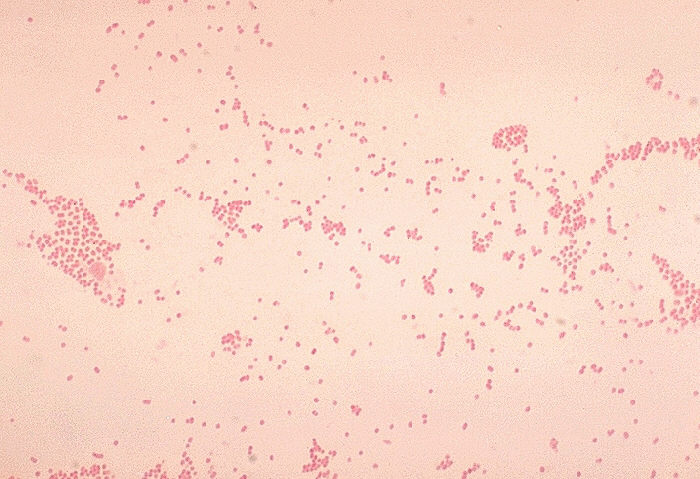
Actinobacillus lignieresi. Gram stain.